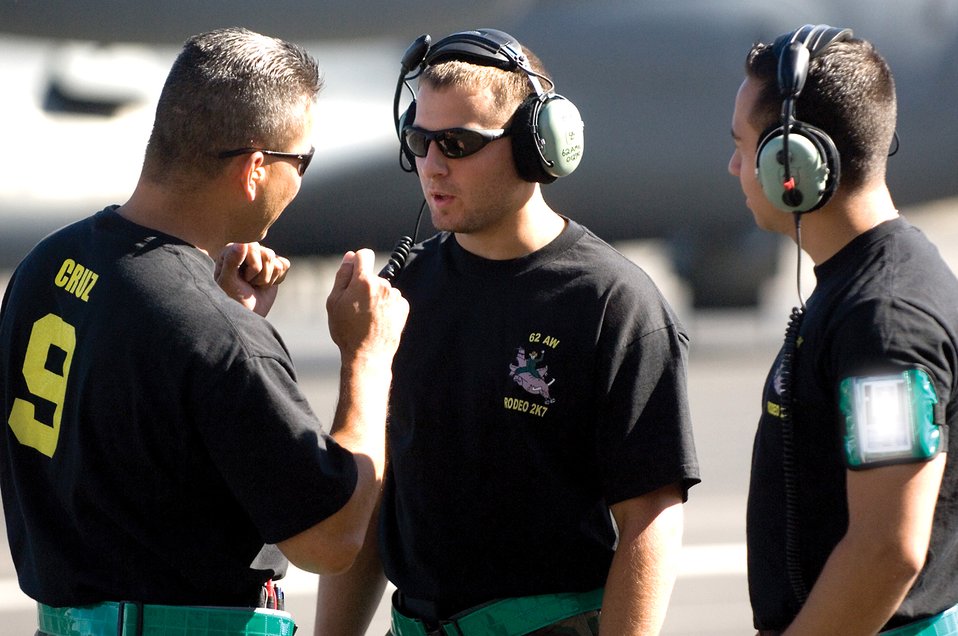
McChord Airmen lasso final training prep for Rodeo

Master Sgt. Ben Cruz (left), Senior Airman Gary Hix and Staff Sgt. Zachary Hoene discuss pre-flight maintenance issues during Rodeo training July 10 at Moses Lake, Wash. The Airmen are assigned to the 62nd Maintenance Group at McChord Air Force Base, Wash.